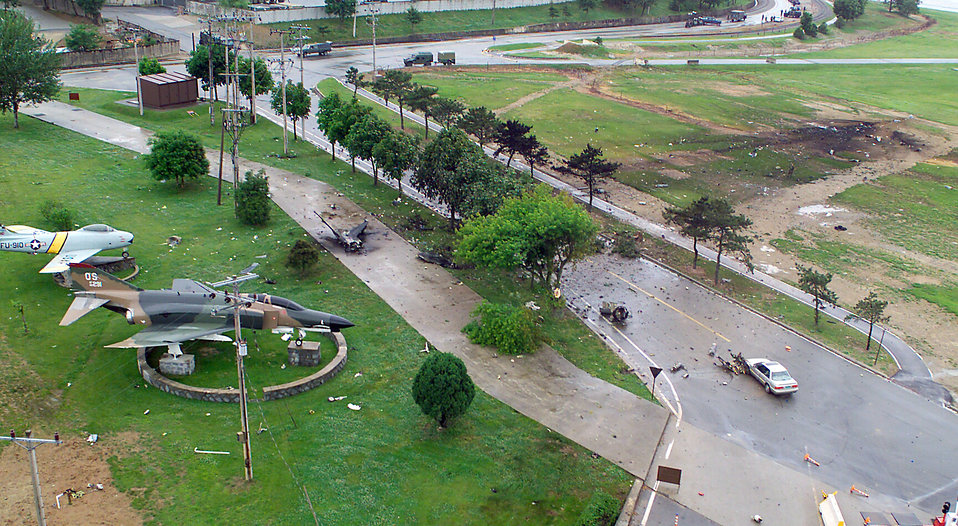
Osan crash sire

OSAN AIR BASE, South Korea -- Remnants of the Air Force F-16 Fighting Falcon lay scattered around aircraft static displays of an F-86 Sabre and F-4 Phantom near the base entrance. A pilot from the 36th Fighter Squadron was taking off on a training mission in the F-16 when the crash occurred May 29.